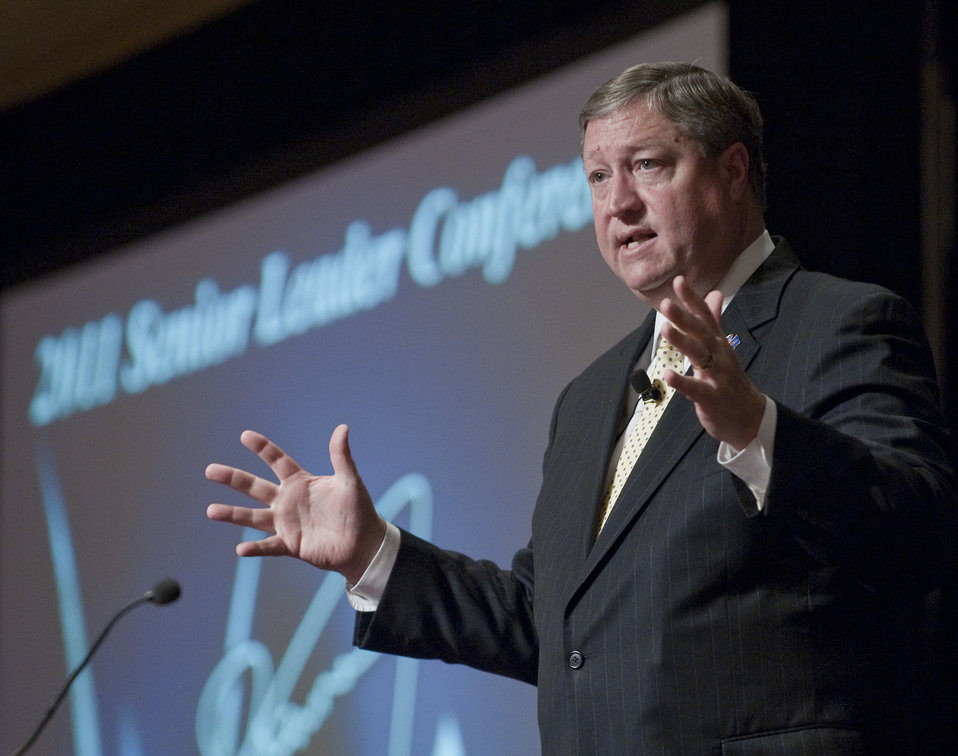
Air Force Reserve Command Senior Leader Conference

Secretary of the Air Force Michael Donley addresses Air Force Reserve Command senior leaders May 16, 2011, during their annual conference in Washington, D.C.